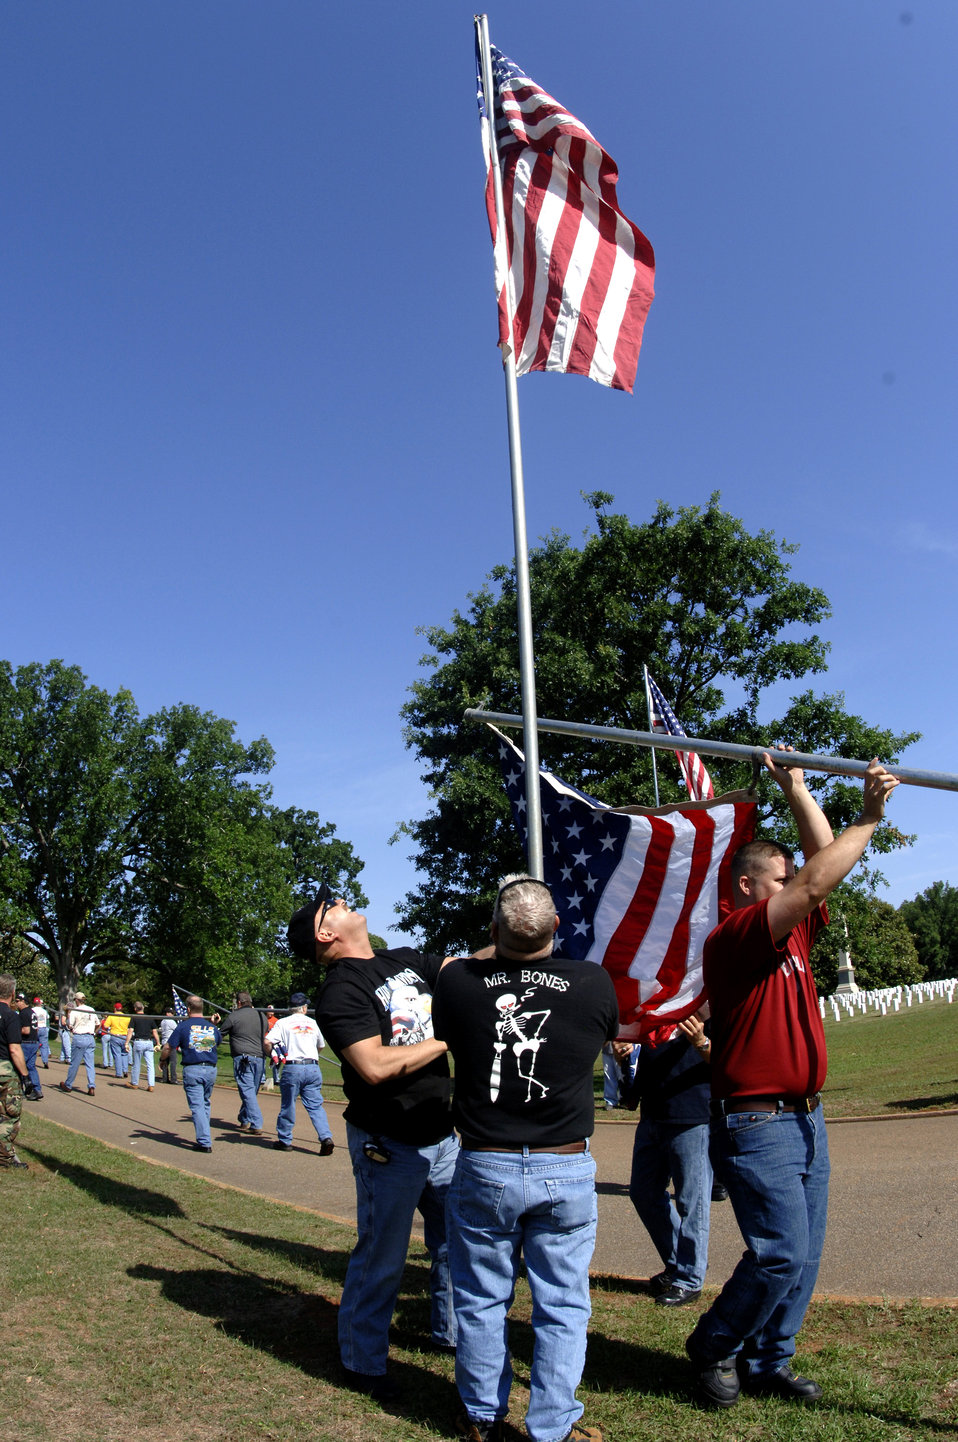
Memorial Day preparations at Andersonville Cemetery

Senior Master Sgt. Charles Bynum and Chief Master Sgt. Richard Patterson (in black T-shirts) raise a U.S. flag at Andersonville National Cemetery near Americus, Ga., on Friday, May 19, 2006. The two were part a group of 70 motorcycle enthusiasts from Robins Air Force Base, Ga., who volunteered to set up U.S. flags for Memorial Day. The group rode as a convoy on the 50-mile trip. Sergeant Bynum and Chief Patterson are from the 116th Air Control Wing.